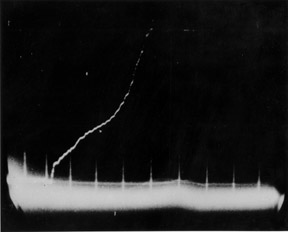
Actual photograph of oscilloscope screen recording 1.3 billion volt energy achieved by the Cosmotron at the Brookhaven National Laboratory on
May 20, 1952.